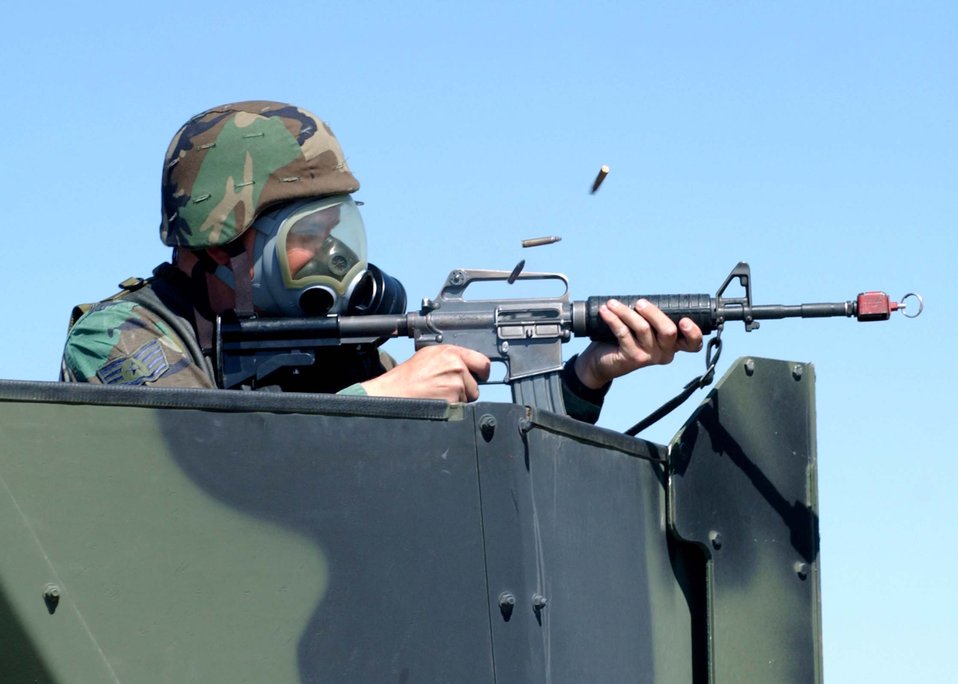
Defenders

INCIRLIK AIR BASE, Turkey - An Airman assigned to the 39th Security Forces Squadron fires his M-16 during an exercise here Sept. 7.